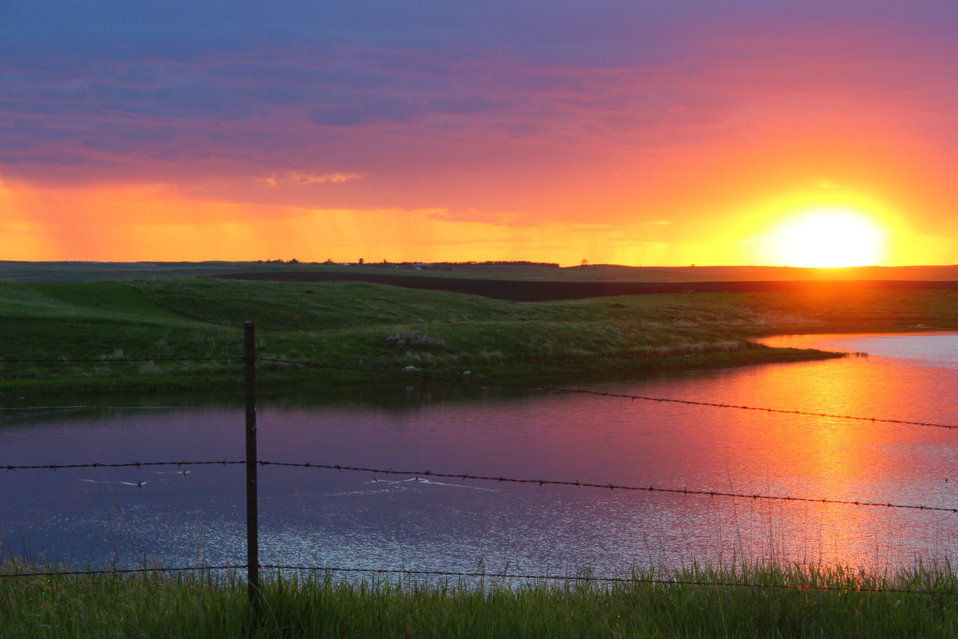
Hochhalter Sunset

A sunset snapped from a hill on the Hochhalter Waterfowl Production Area in Logan County, North Dakota.